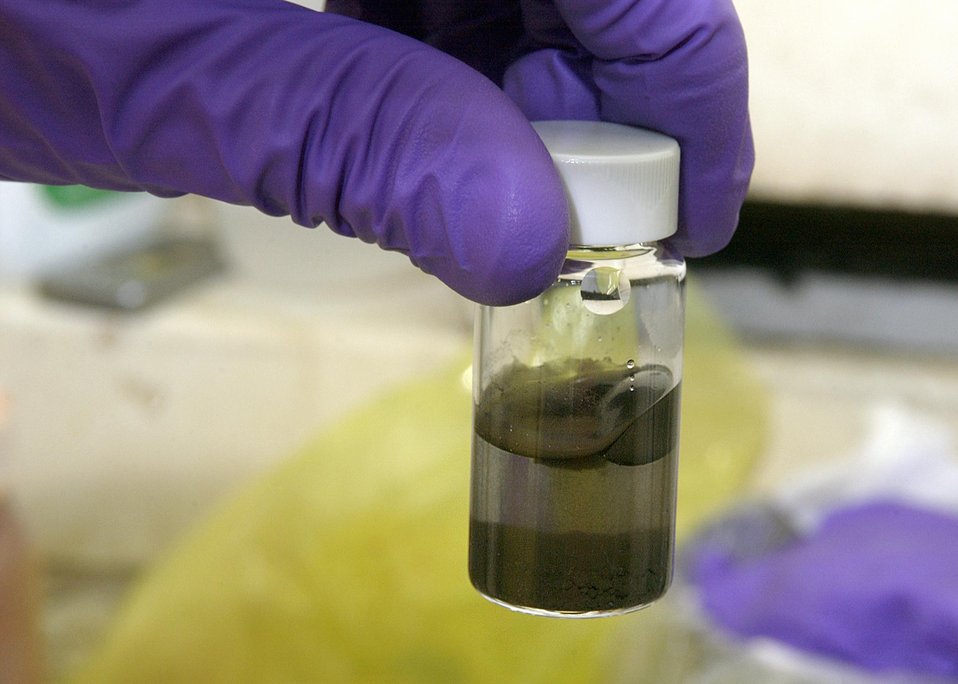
The results of this work could improve the current understanding of waste from durability in the Yucca Mountain Waste Repository.

PNNL is studying the molecular mechanism of hydrophobicity in uranium. Hydrophobicity, the condition of not binding to or dissolving in water(shown in photo) , might be a key reason that uranium deposits are stable for millions of years in nature.